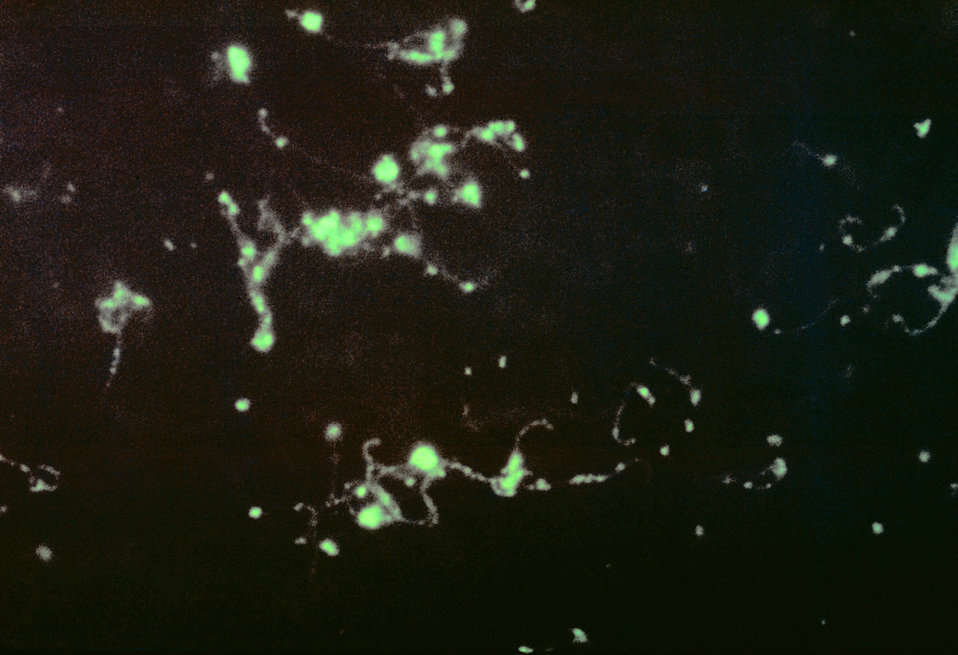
A photomicrograph of a Fluorescent Antibody (FA) stain of Leptospira bacteria in a liver impression smear.